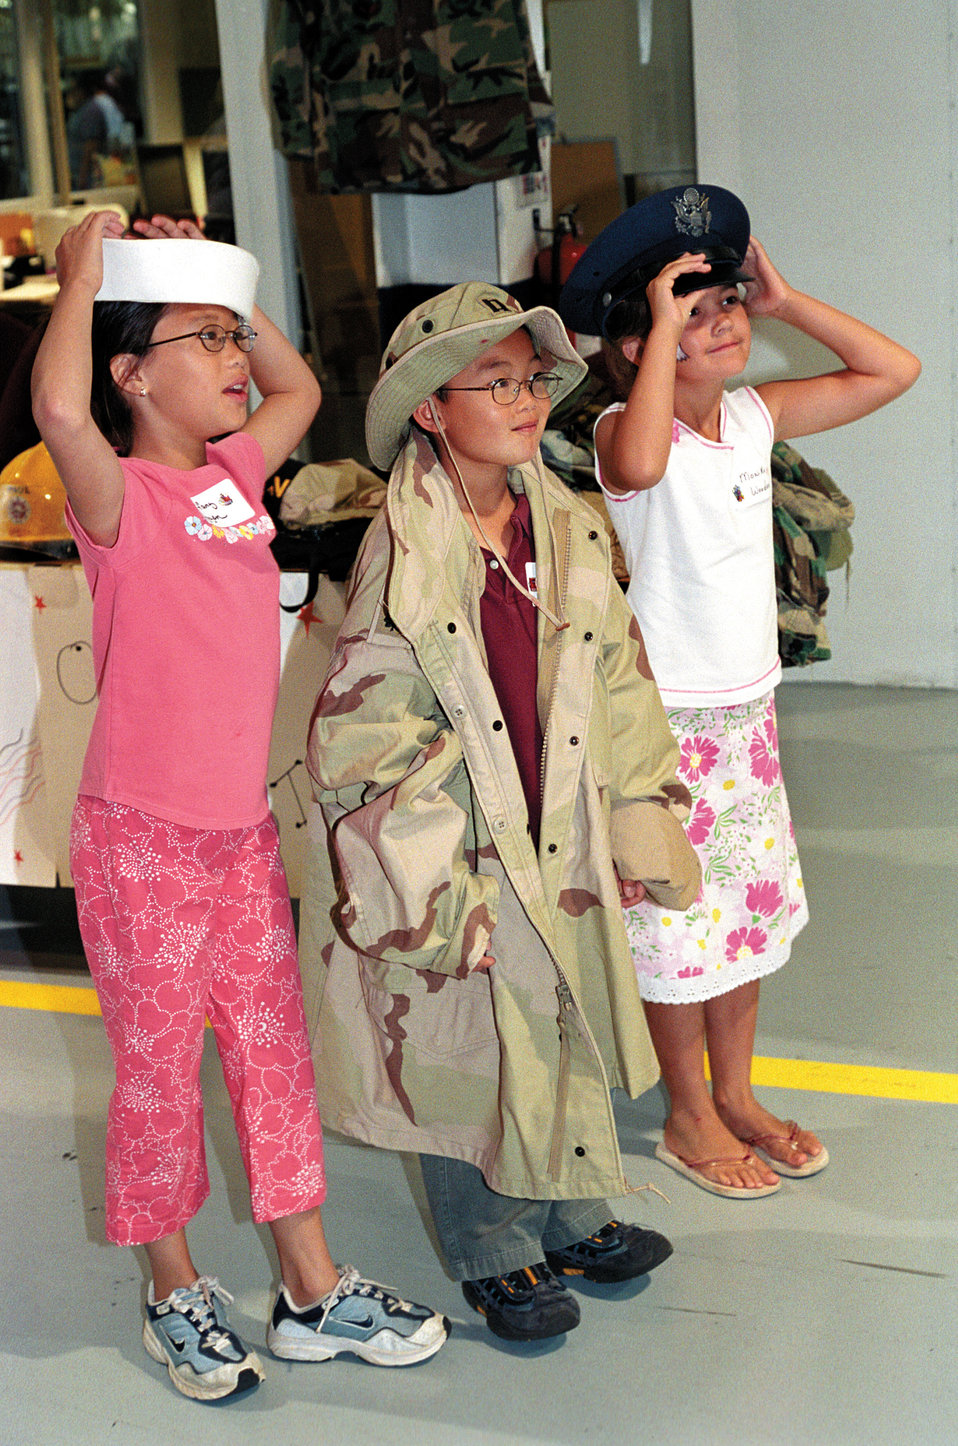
Child's play

TINKER AIR FORCE BASE, Okla. -- (Left to right) Tiffany Nguyen, 10; her brother, Matthew, 8; and Monika Wooden, 7, try on various military uniforms at a booth during the